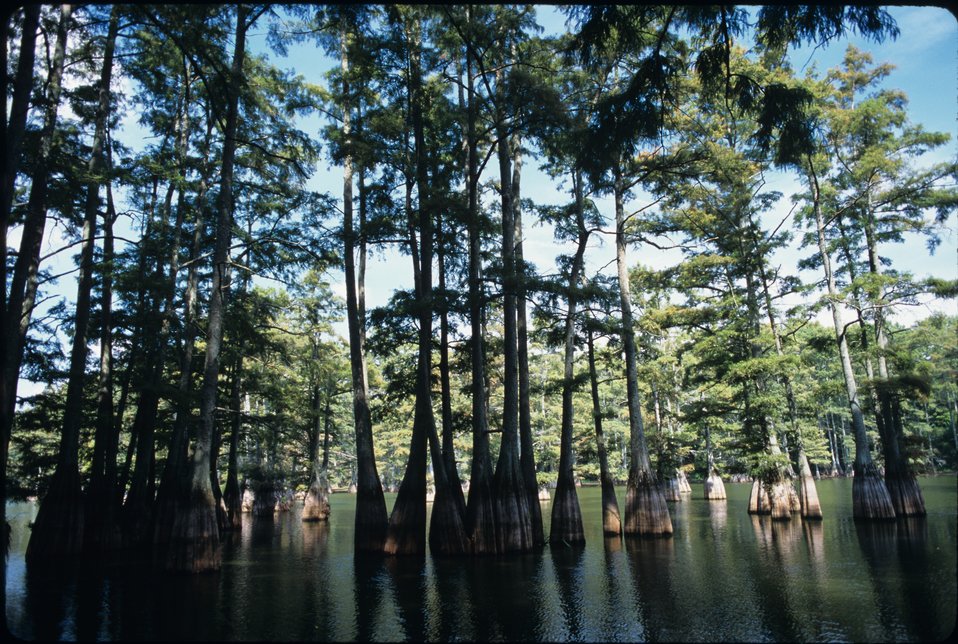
The sun shines through the trees at the Big Thicket National Preserve in late August 1996. The preserve is located just north of Houston and Beaumont, TX and has historically been home to dense woodlands in the state. The Big Thicket was mostly uninhabited until heavy settlement from the U.S. began in the mid-19th century, and was even used as a refuge by runaway slaves and other fugitives.